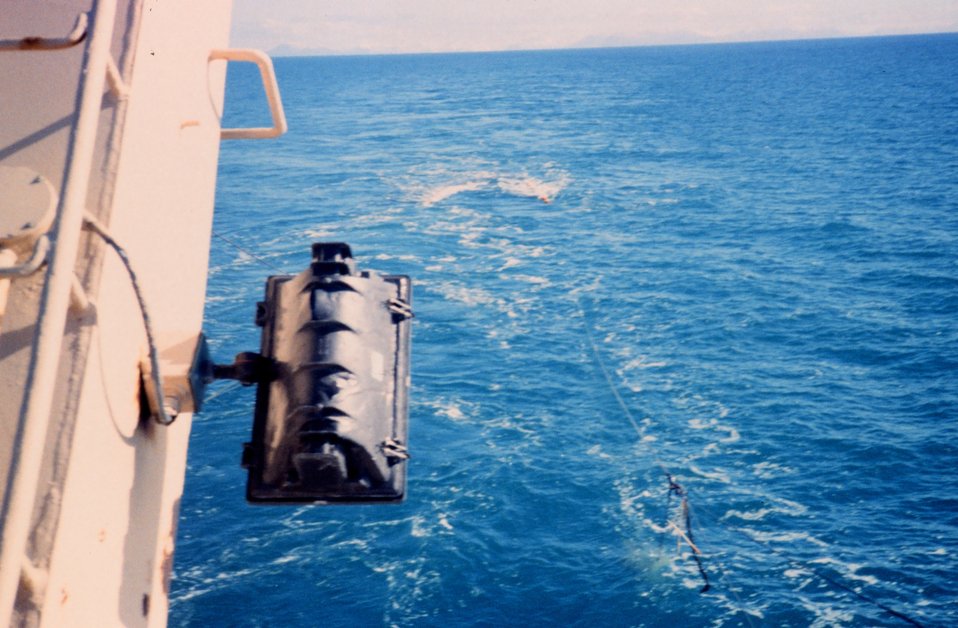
Photo # 4 - Streaming net during trawling operations. Just prior to 'shooting the doors' and pulling yellow floats under water.